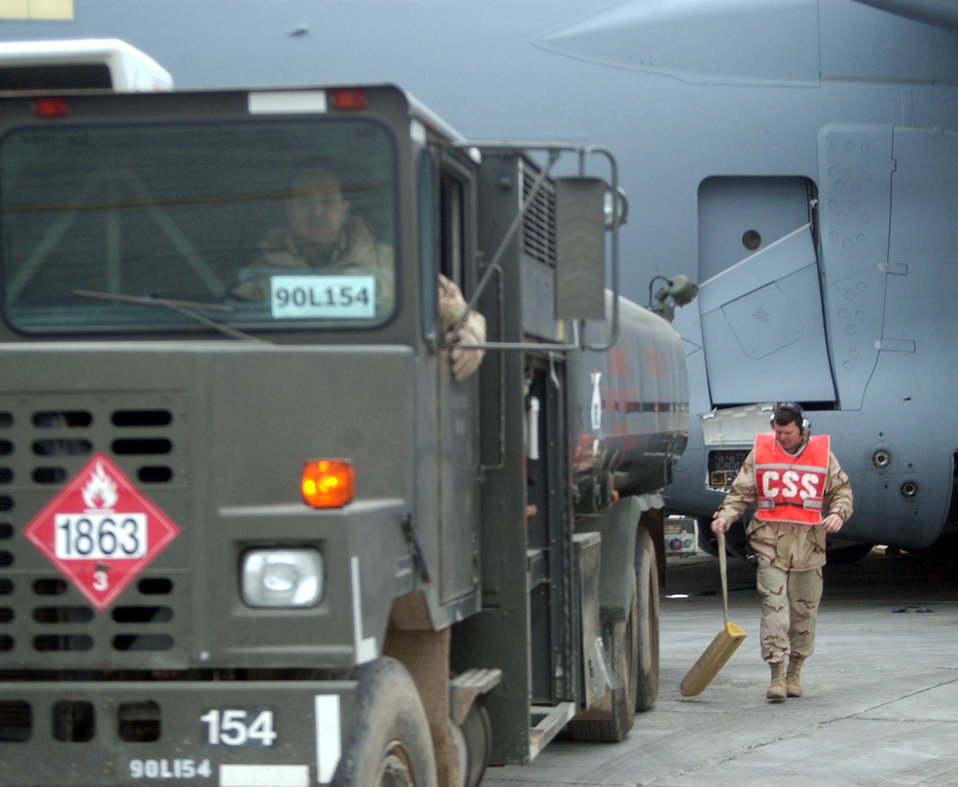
Small base has big mission

KARSHI-KHANABAD AIRFIELD, Uzbekistan -- Senior Master Sgt. Terry Gazaway (right) prepares to guide Master Sgt. Tom Guerrero as he backs a fuel truck toward a visiting C-17 Globemaster III here. Sergeant Gazaway is a transient alert superintendent and Sergeant Guerrero is a fuels superintendent. Both are assigned to the 416th Expeditionary Operations Group.